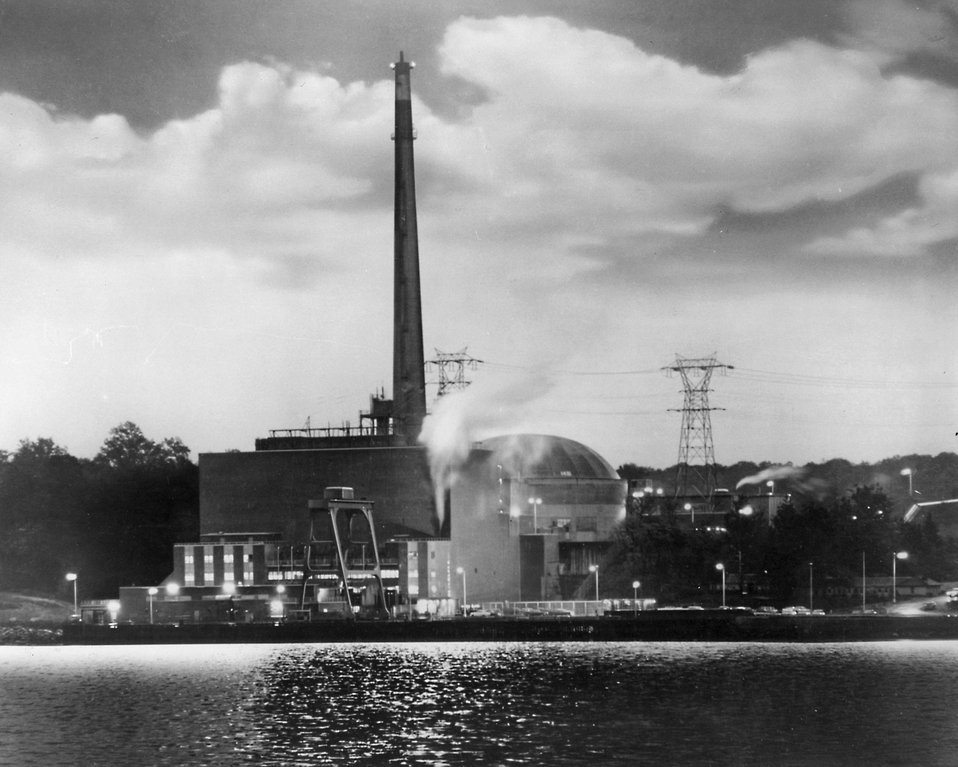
Consolidated Edison's Indian Point nuclear power station is located on the Hudson River about 24 miles north of New York City. The station became operable August 7, 1962. Circa 1963.